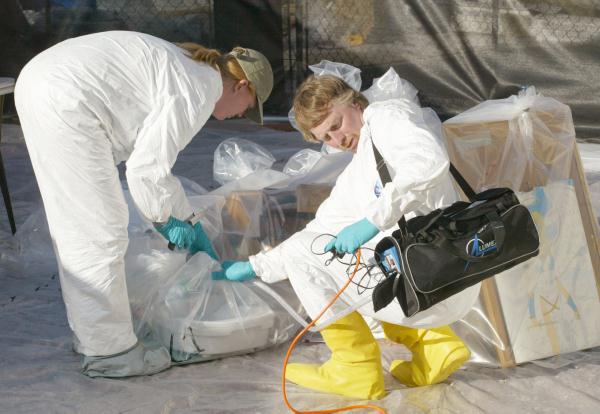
EPA workers clean up residential mercury spill

U.S. EPA emergency response contractors clean up mercury at a Nevada home.